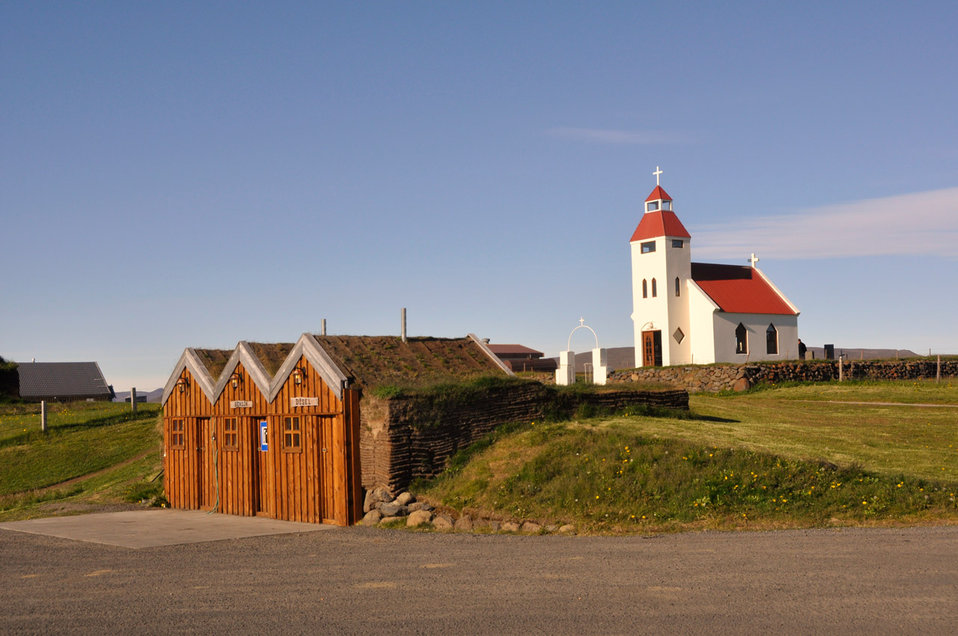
Village

Fjallakaffi - a village in the mainland of iceland.